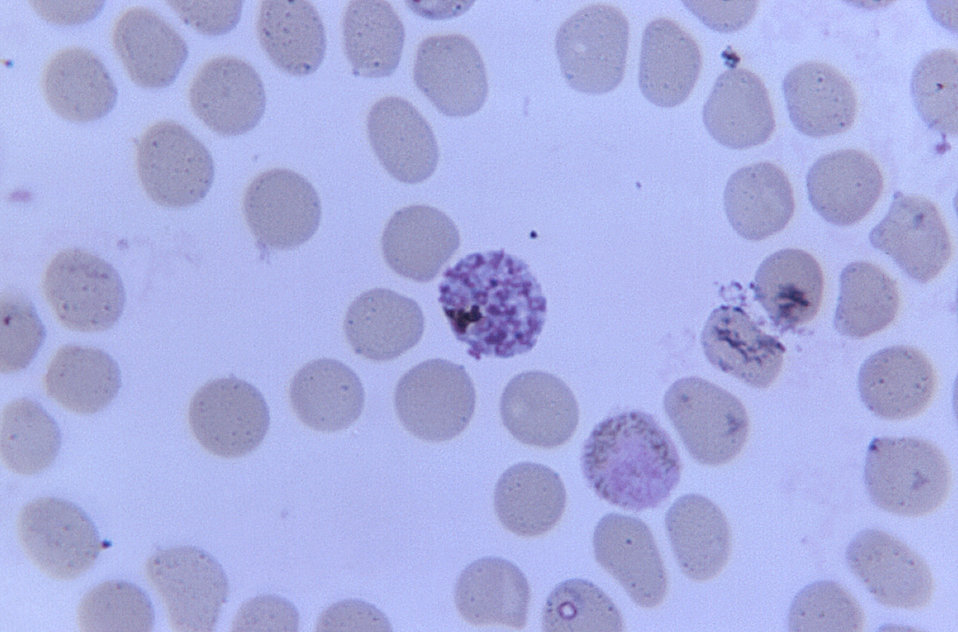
Under a magnification of 1125X, this photomicrograph of a simian blood sample revealed the presence of a mature simian malarial schizont and gametocyte.